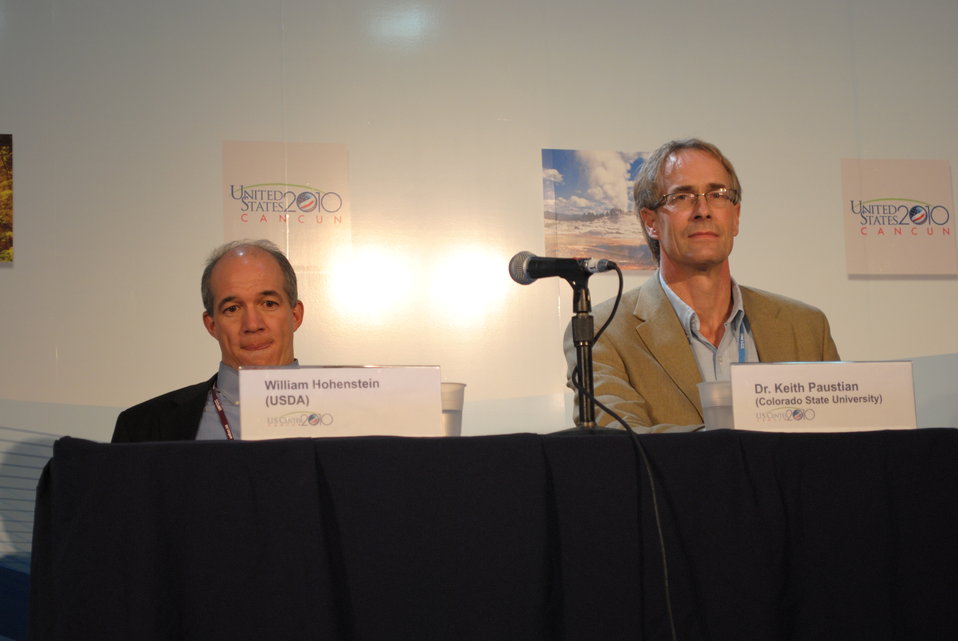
Panelists from the USDA and Colorado State University Respond to Questions

William Hohenstein of the U.S. Department of Agriculture and Dr. Keith Paustian of Colorado State University respond to questions at the U.S. Center at COP-16 in Cancun, Mexico, on December 7, 2010.